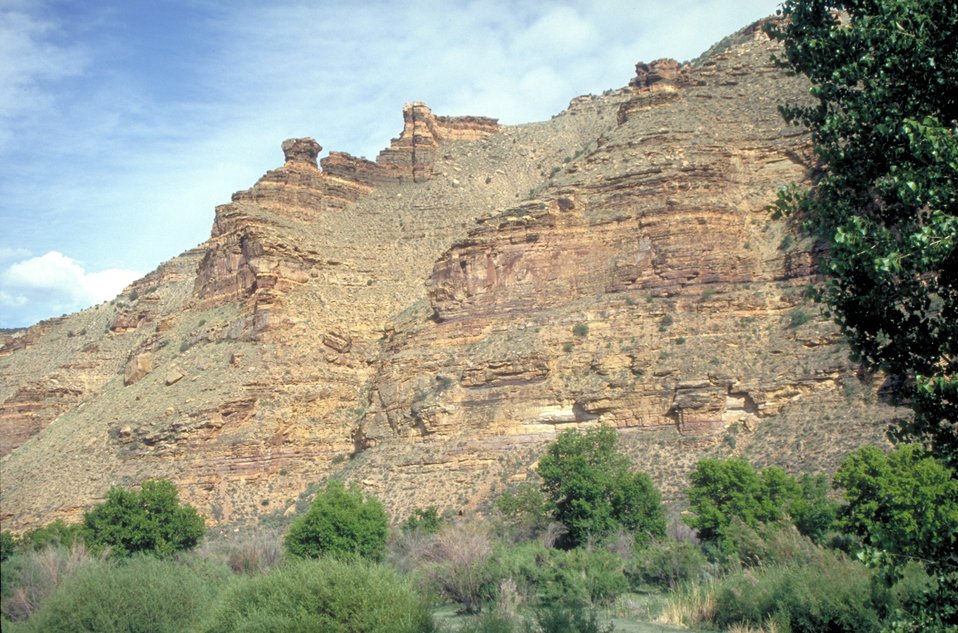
Nine-Mile Canyon near Price, Utah.